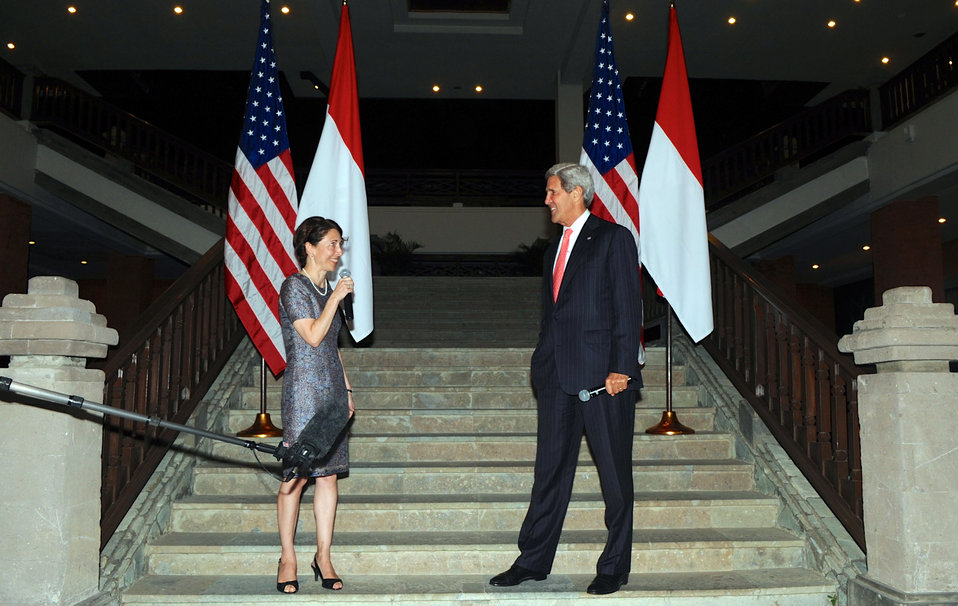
Secretary Kerry and Chargé d'Affaires Bauer Thank Embassy Jakarta Staff

U.S. Secretary of State John Kerry and Chargé d'Affaires Kristen Bauer thank members of the Embassy Jakarta staff on October 8, 2013, for their temporary assignment to Bali, Indonesia, to support to APEC Ministerial and Leaders meetings.